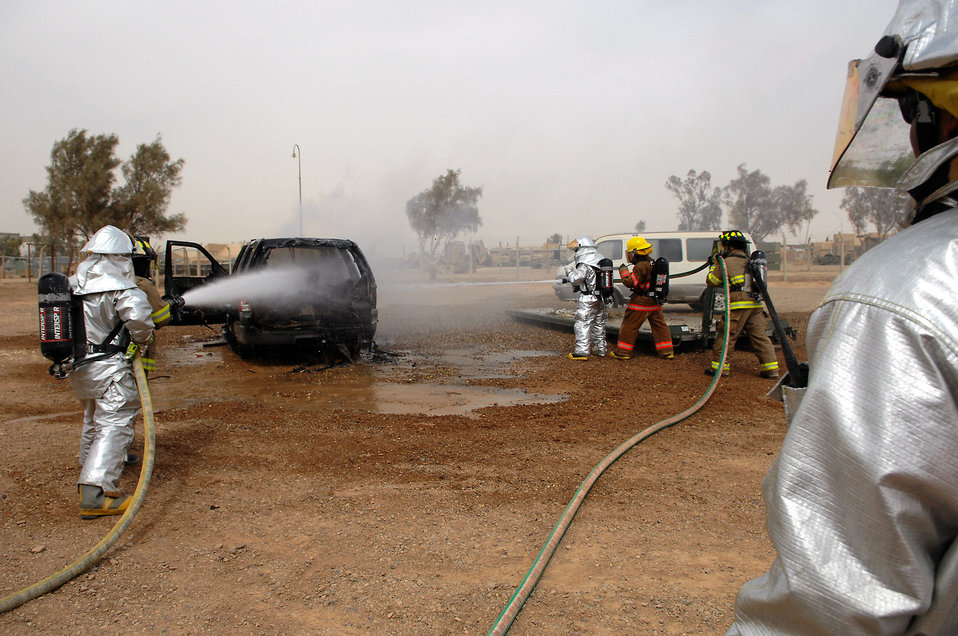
Bustin' in

Firefighters from the 332nd Expeditionary Civil Engineer Squadron and 8th Ordnance Company put out a vehicle fire during vehicle extrication training April 5 at Balad Air Base, Iraq. During the training, Army and Air Force firefighters honed their abilities to rescue people trapped in vehicles and other confined spaces. Working jointly allows the firefighters to coordinate their efforts when responding to emergency situations.